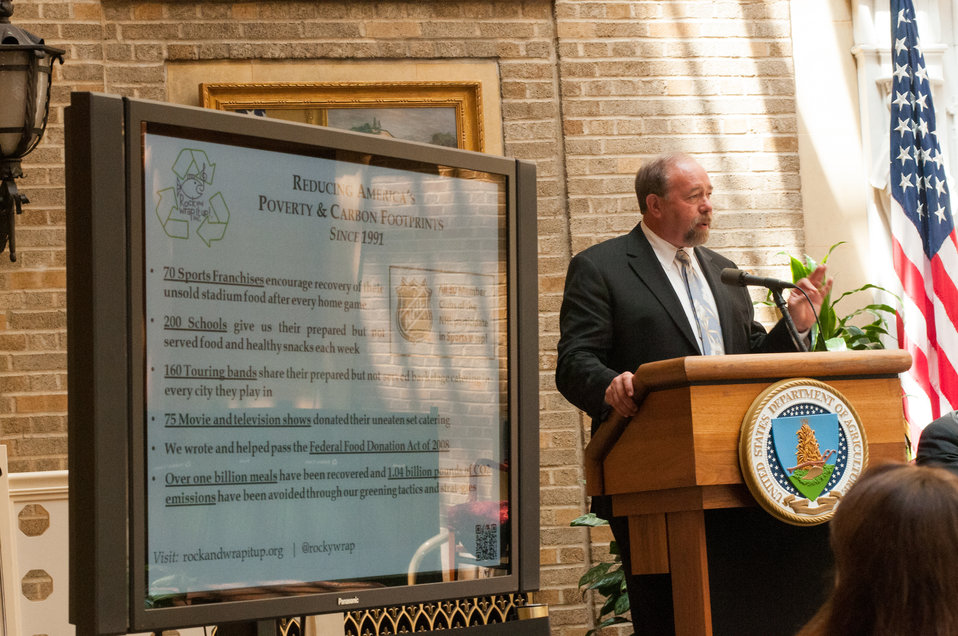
Chief Executive Officer (CEO) and Founder of Rock and Wrap It Up! Syd Mandelbaum discusses the importance of public and private cooperation in the effort to end hunger in the U.S. during the U.S. Food Waste Challenge sponsored by the U.S. Department of Agriculture (USDA) and Environmental Protection Agency (EPA) at USDA in Washington, D.C. on Tuesday, Jun. 4, 2013. The U.S. Food Waste Challenge is a nationwide effort to reduce, recover and recycle U.S. food waste.